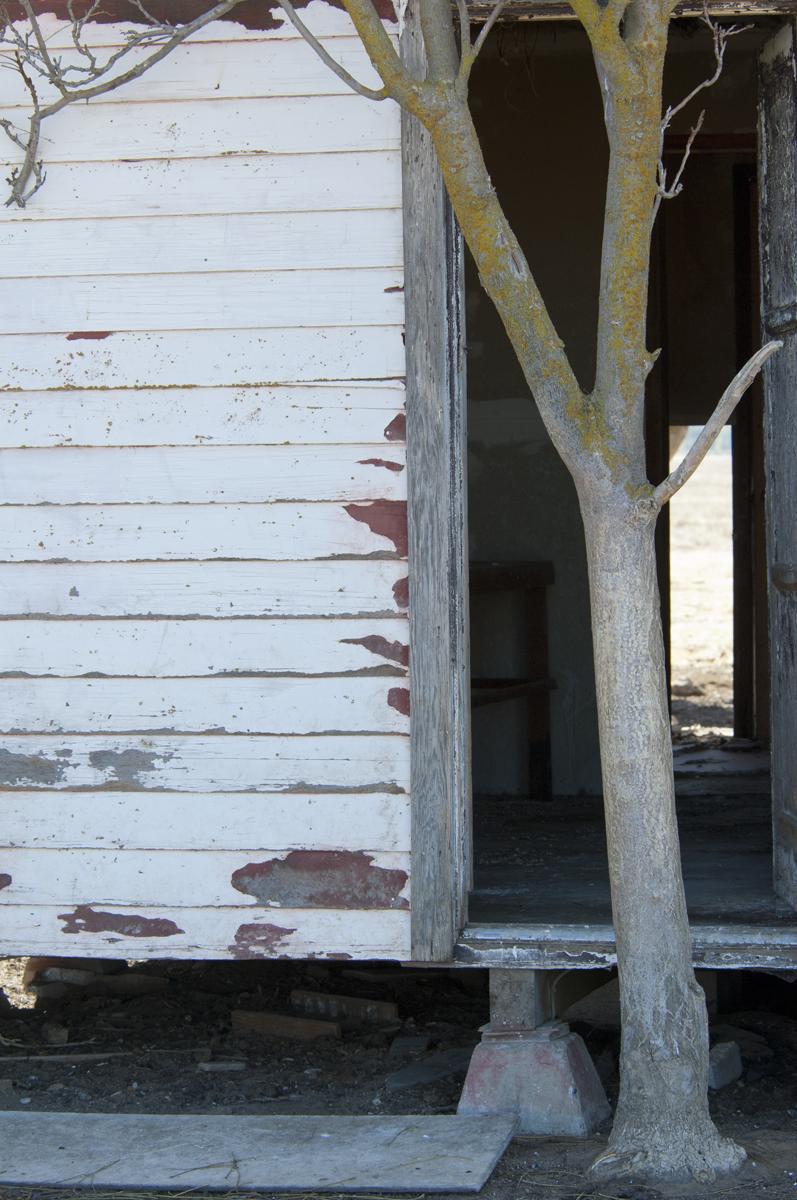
Home on the Range, Carrizo Plain